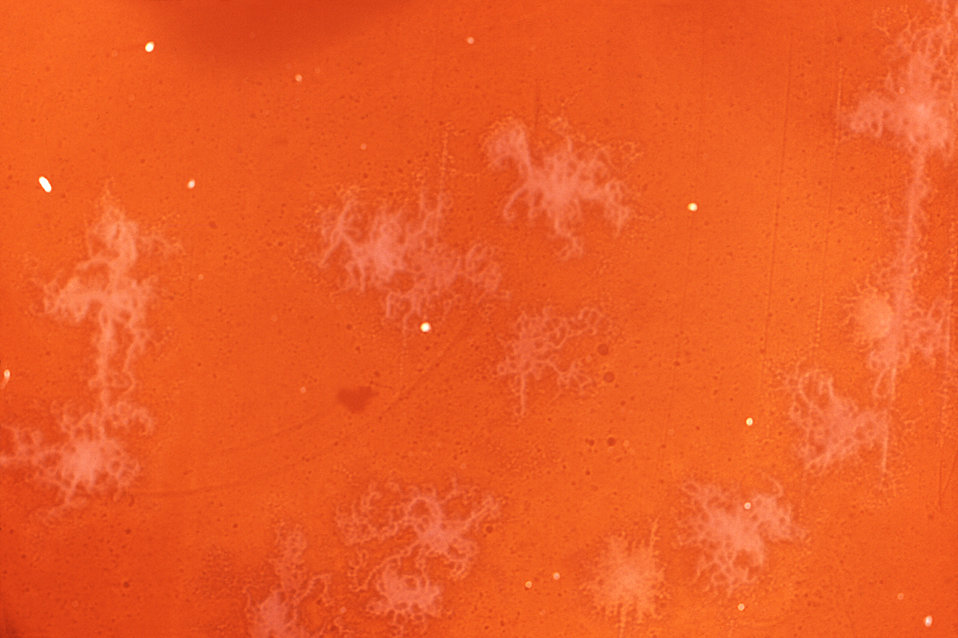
Under only a 2X magnification, this photograph revealed some of the details displayed atop a Petri dish culture of rod-shaped, Gram-positive Clostridium septicum bacteria.